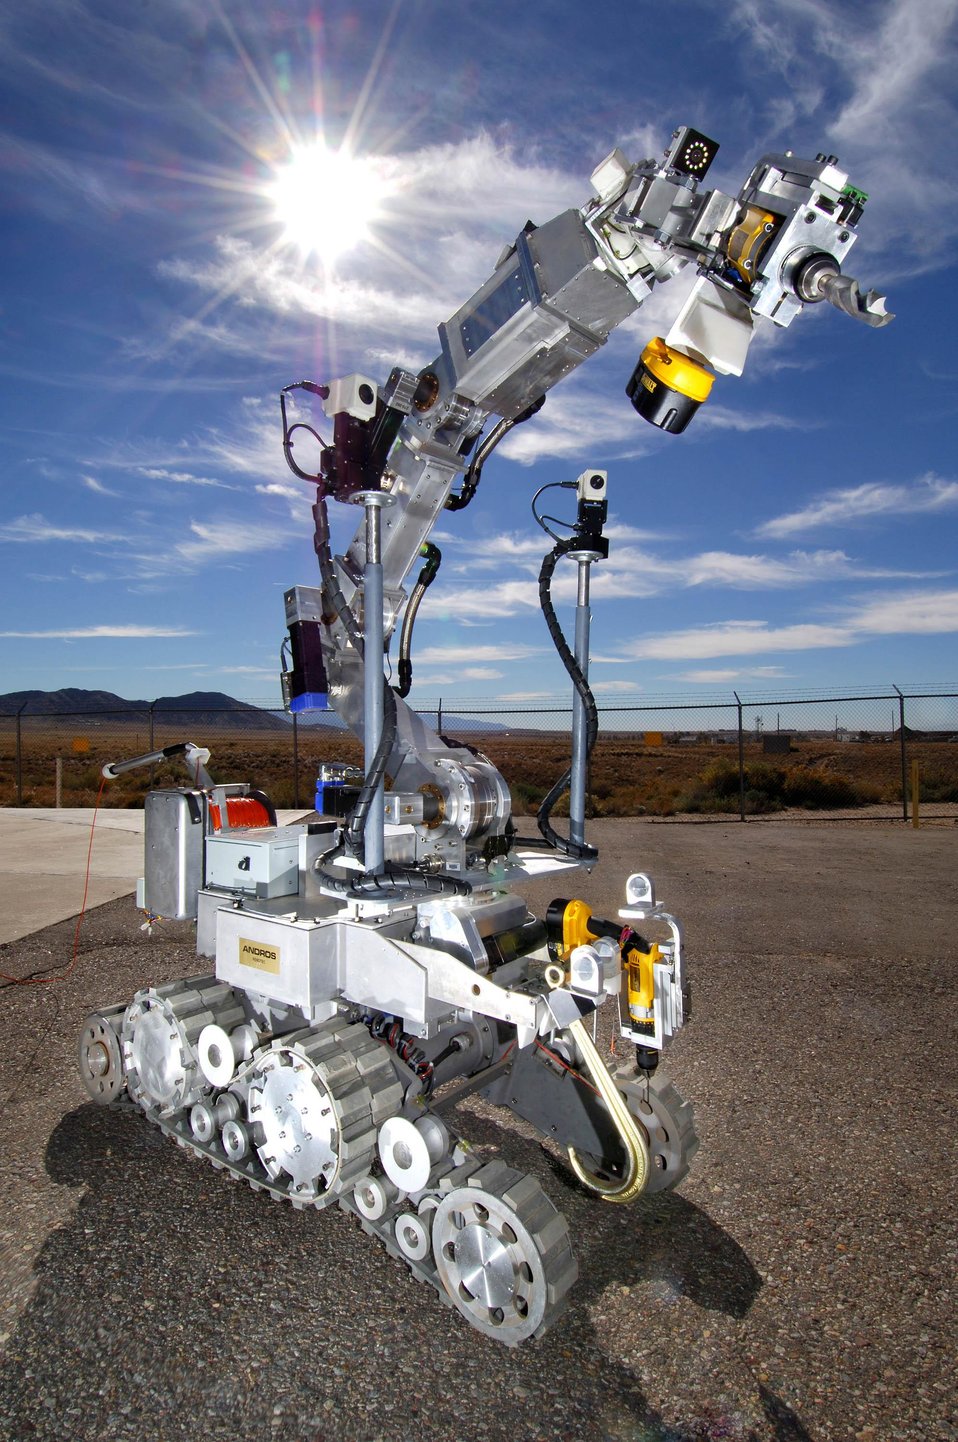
THE MIGHTY MOUSE ROBOT AT SANDIA NATIONAL LABORATORY.

THE ROBOT IS PART OF THE RADIOLOGICAL ASSISTANCE PROGRAM AT SANDIA NATIONAL LABORATORY AND COLLABORATES WITH DOD'S WHITE SANDS MISSILE RANGE GAMMA IRRADIATION FACILITY. THE FACILITY'S PURPOSE IS TO IRRADIATE ELECTRIC CIRCUIT BOARDS TO TEST THEIR SURVIVABILITY UNDER EXTREME CIRCUMSTANCES. THE ROBOT WEIGHS 600 POUNDS, FIVE FOOT LONG, ROLLS ON TREADS AND CAN MANEUVER AROUND OBSTACLES AND HAS A LONG MULTI-JOINTED GRIPPER ARM. RECENTLY, MIGHTY MOUSE RESOLVED A PROBLEM WITH A STUCK 15 KILOCURIE COBALT-60 SOURCE AT THE GIF. WORKERS AT THE FACILITY WERE ABLE TO SUCCESSFULLY RETURNED A SOURCE TO A SAFE CONDITION WITH MINIMAL RADIATION DOSE TO PERSONNEL.